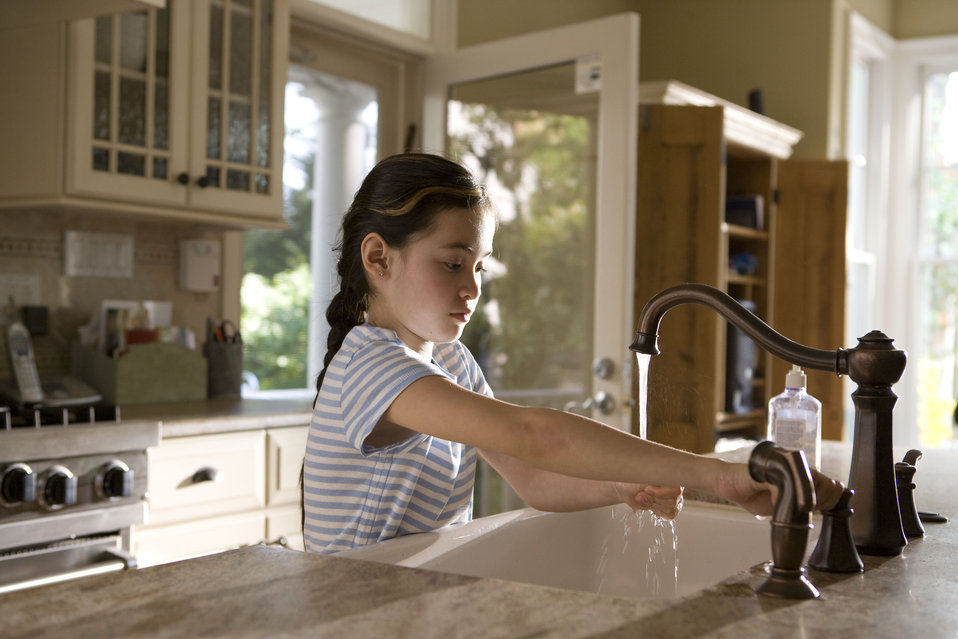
This young girl was shown in the process of properly washing her hands at her kitchen sink, briskly rubbing her soapy hands together under fresh running tap water, in order to remove germs, and contaminants, thereby, reducing the spread of pathogens, and her ingestion of environmental chemicals or toxins. Children are taught to recite the Happy Birthday song, during hand washing, allotting enough time to completely clean their hands.